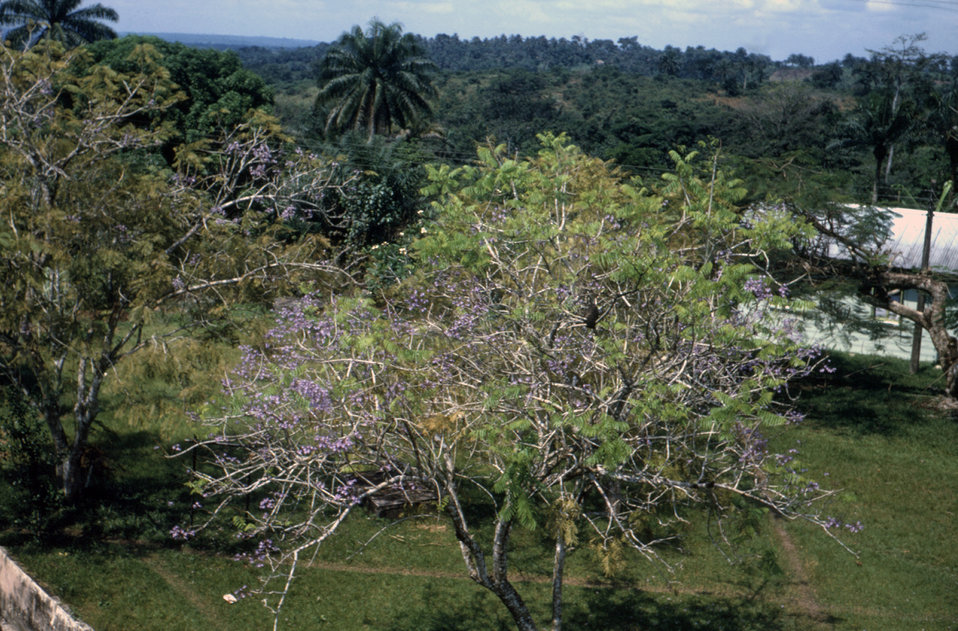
This photograph shows an aerial view of eastern Nigeria in the late 1960s during the time of the Nigerian-Biafran war.